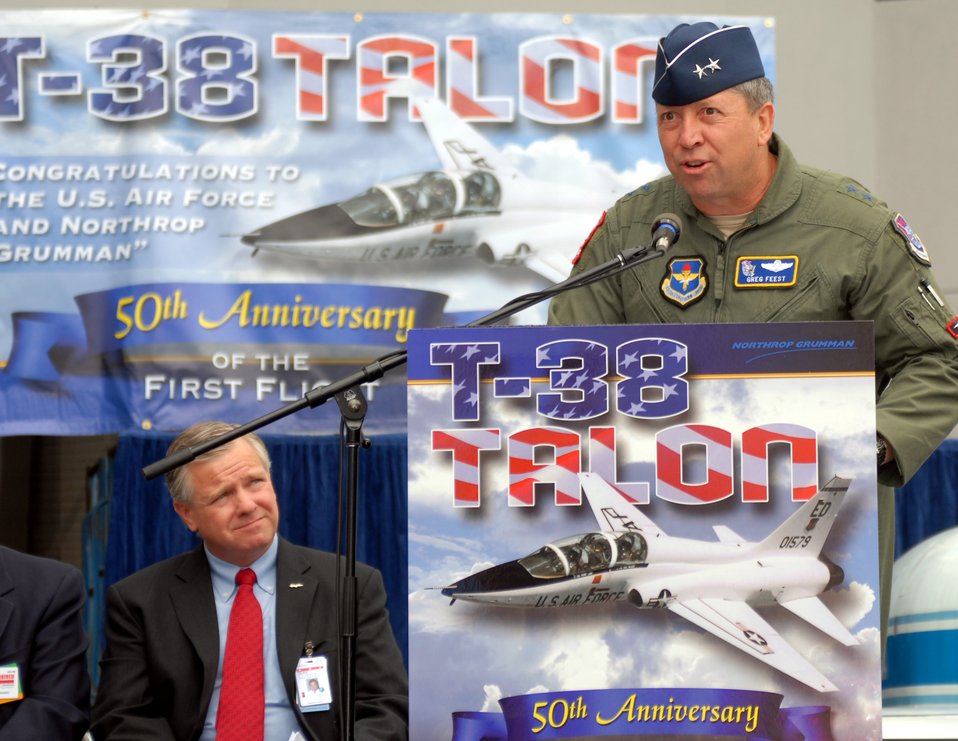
T-38 celebrates 50 years of service

Maj. Gen. Greg Feest, 19th Air Force commander at Randolph Air Force Base, Texas, speaks at the Northrop Grumman facility in El Segundo, Calif., April 10 during the commemoration of the T-38 Talon?s first flight fifty years ago on April 10, 1959. Duke Dufresne (seated), sector vice president and general manager of the Strike and Surveillance Systems division of Northrop Grumman Aerospace Systems, also provided remarks during the event.